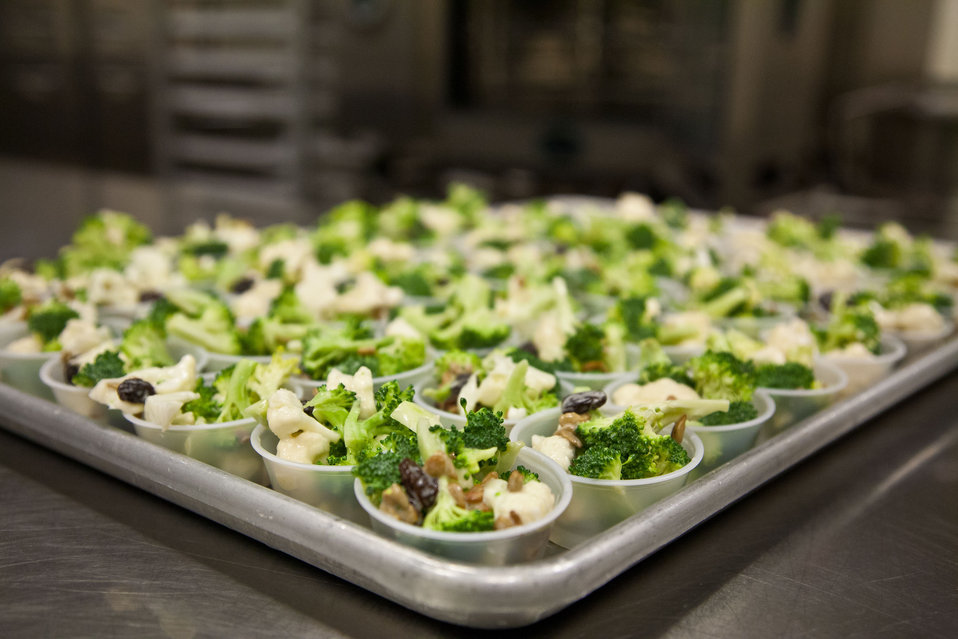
The sunny broccoli and cauliflower toss that more than 50 students from the 5th grade classes at Yorkshire Elementary School in Manassas, VA., sampled during a taste testing of the new school lunch menu created to meet the new standards. Students tested a sample menu of black-bean filled pizza, pineapple spear, plantain, sunny broccoli and cauliflower toss, and an apple and celery cup with sunbutter dip (a peanut butter substitution), on Wednesday, September 5, 2012.